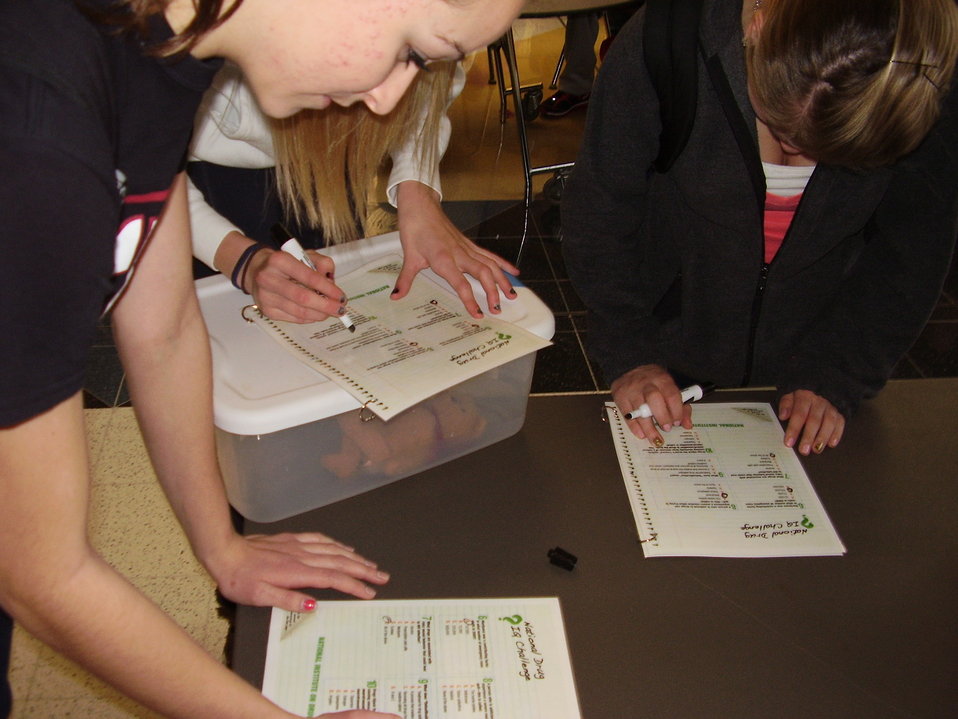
Wisconsin Teens and NDFW 2013

Combined Locks, Wis., Local teens participate in NDFW 2013 Events.